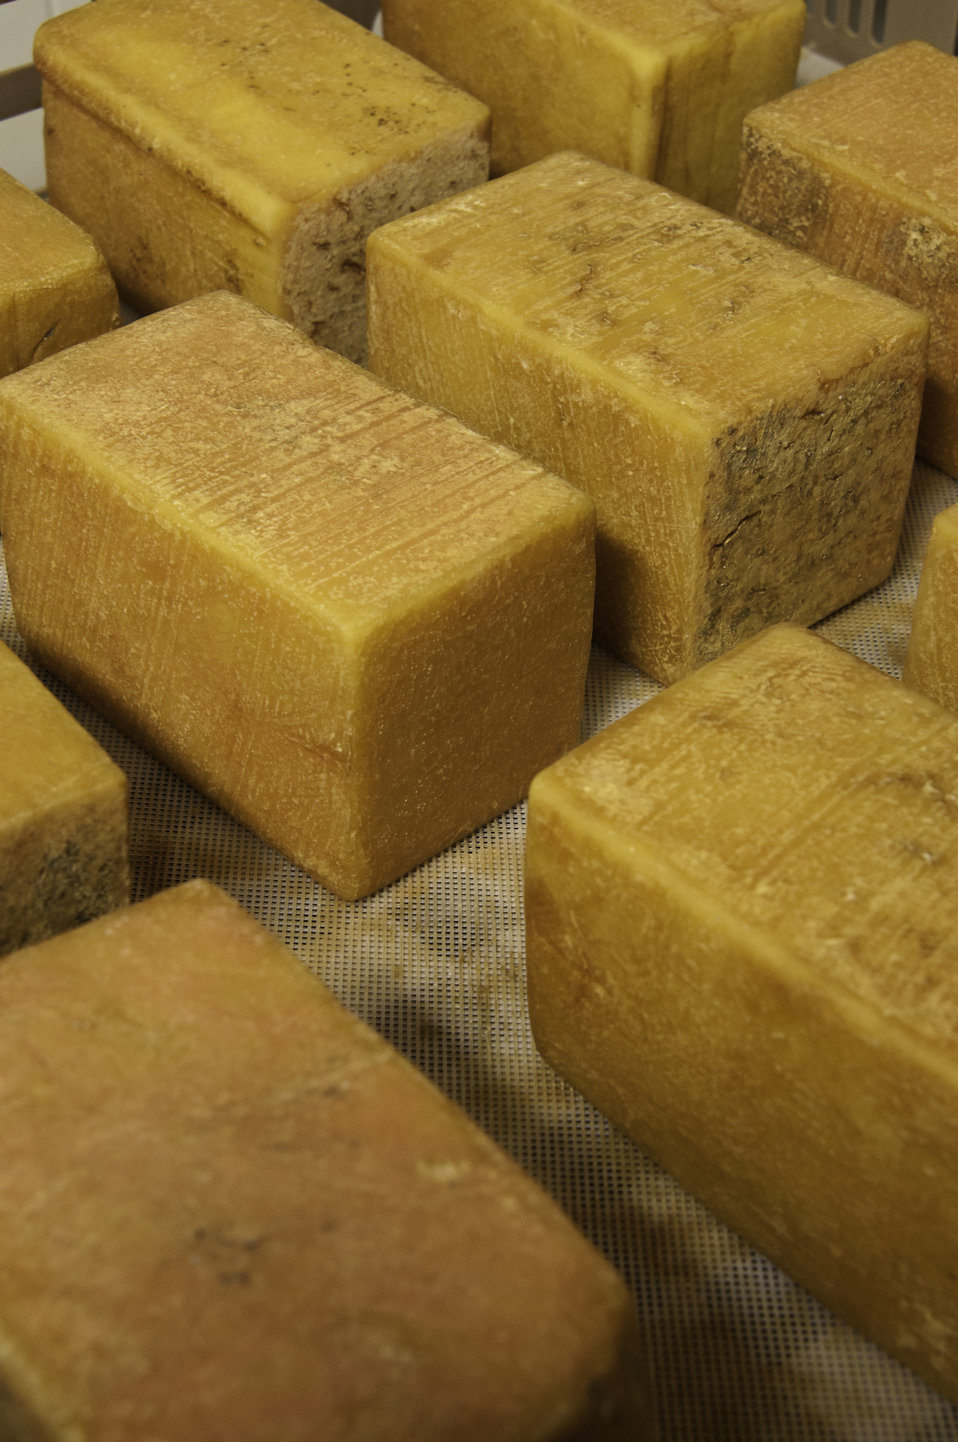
Blocks of 16 Mile Beer Cheese cures in the aging room at Chapel’s Country Creamery in Easton, MD. The cheese is washed with mash from 16 Mile Brewery. The dairy produces hand crafted artisanal cheeses with fresh raw milk produced on the dairy’s Grade A dairy farm. The dairy’s grass fed Jersey and Holstein cows produce high quality milk, rich in cream. The milk is all-natural and contains no synthetic hormones, antibiotics, or chemical compounds.